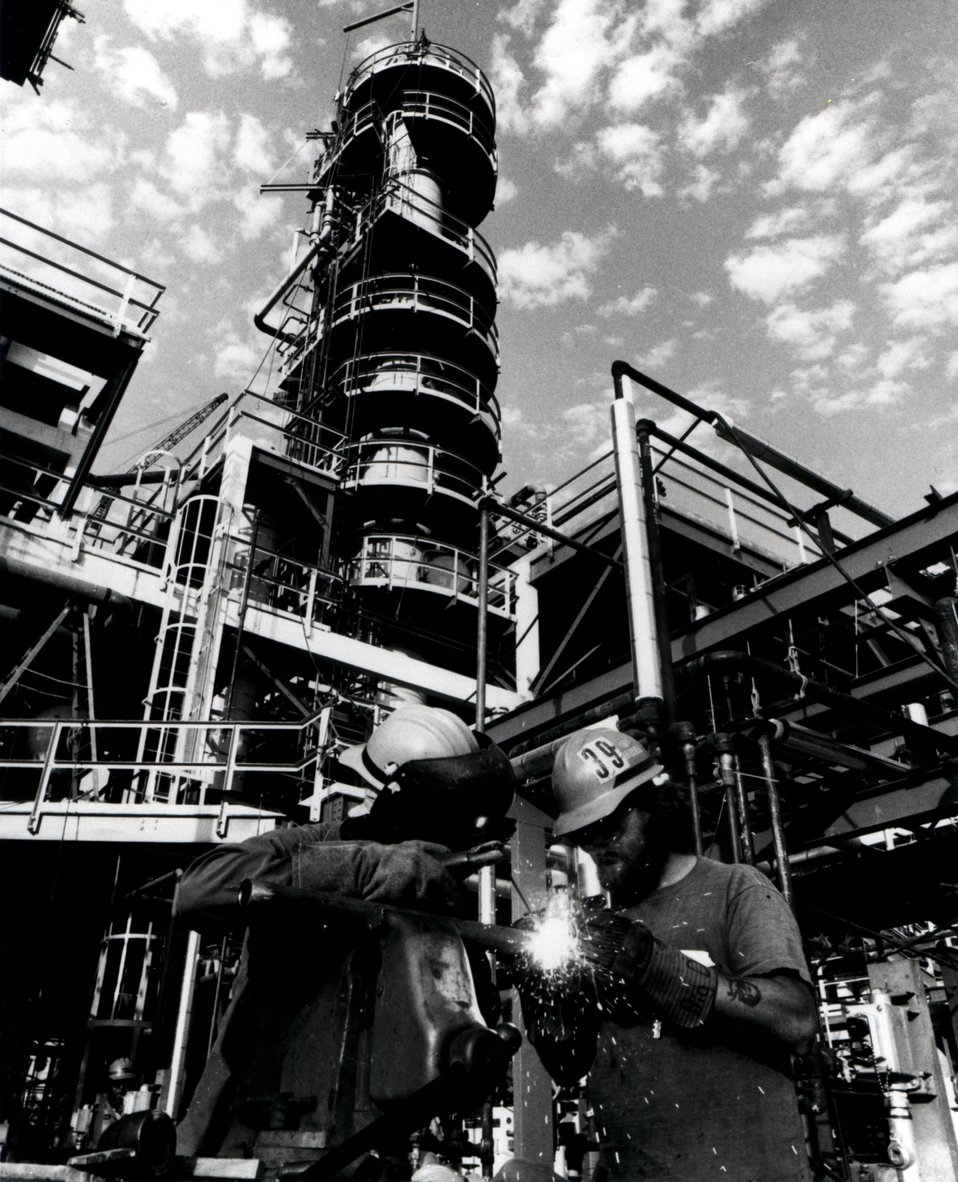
Construction progress of Donor Solvent Coal Liquifaction 250 tons per day Pilot Plant, at Baytown, Texas. Circa 1980.